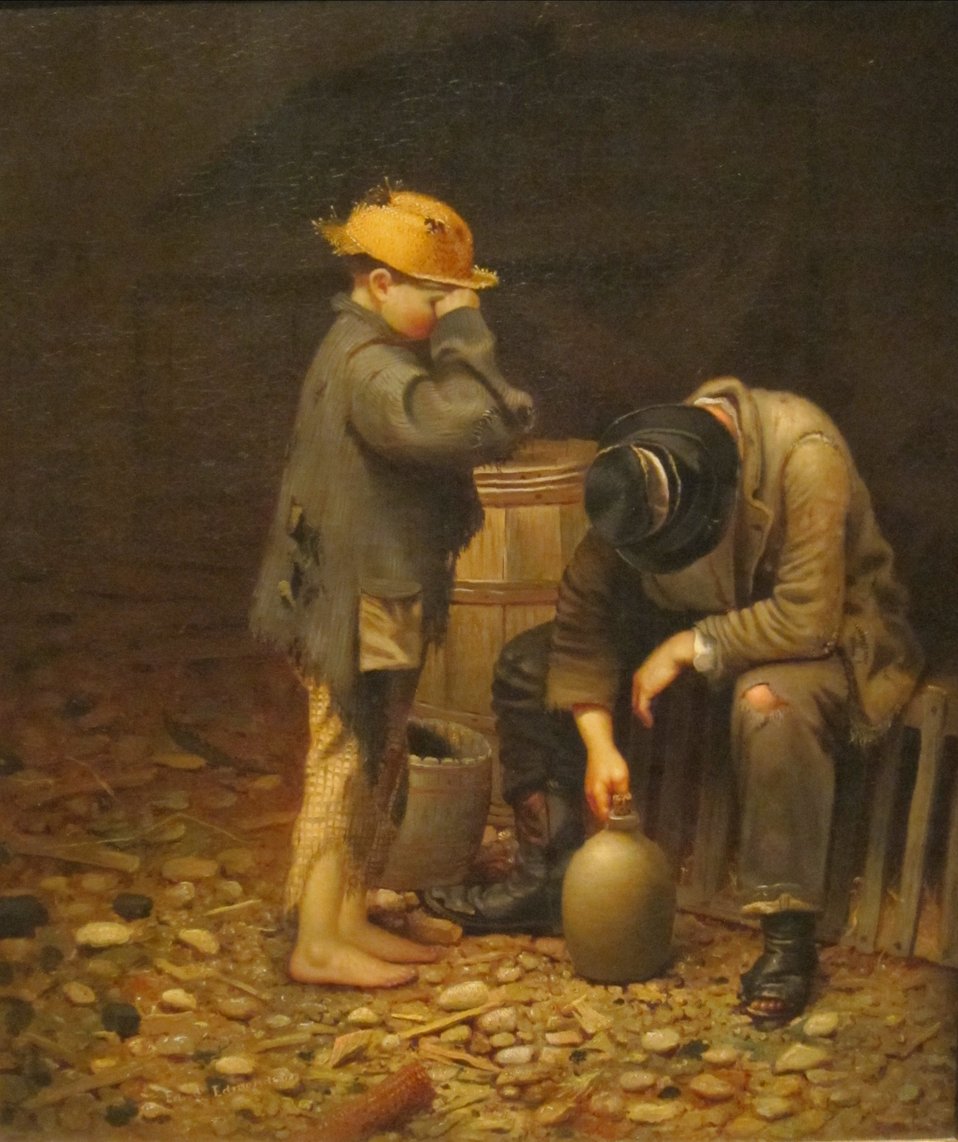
'Temperance Leture' by Edward Edmondson, Jr., Dayton Art Institute